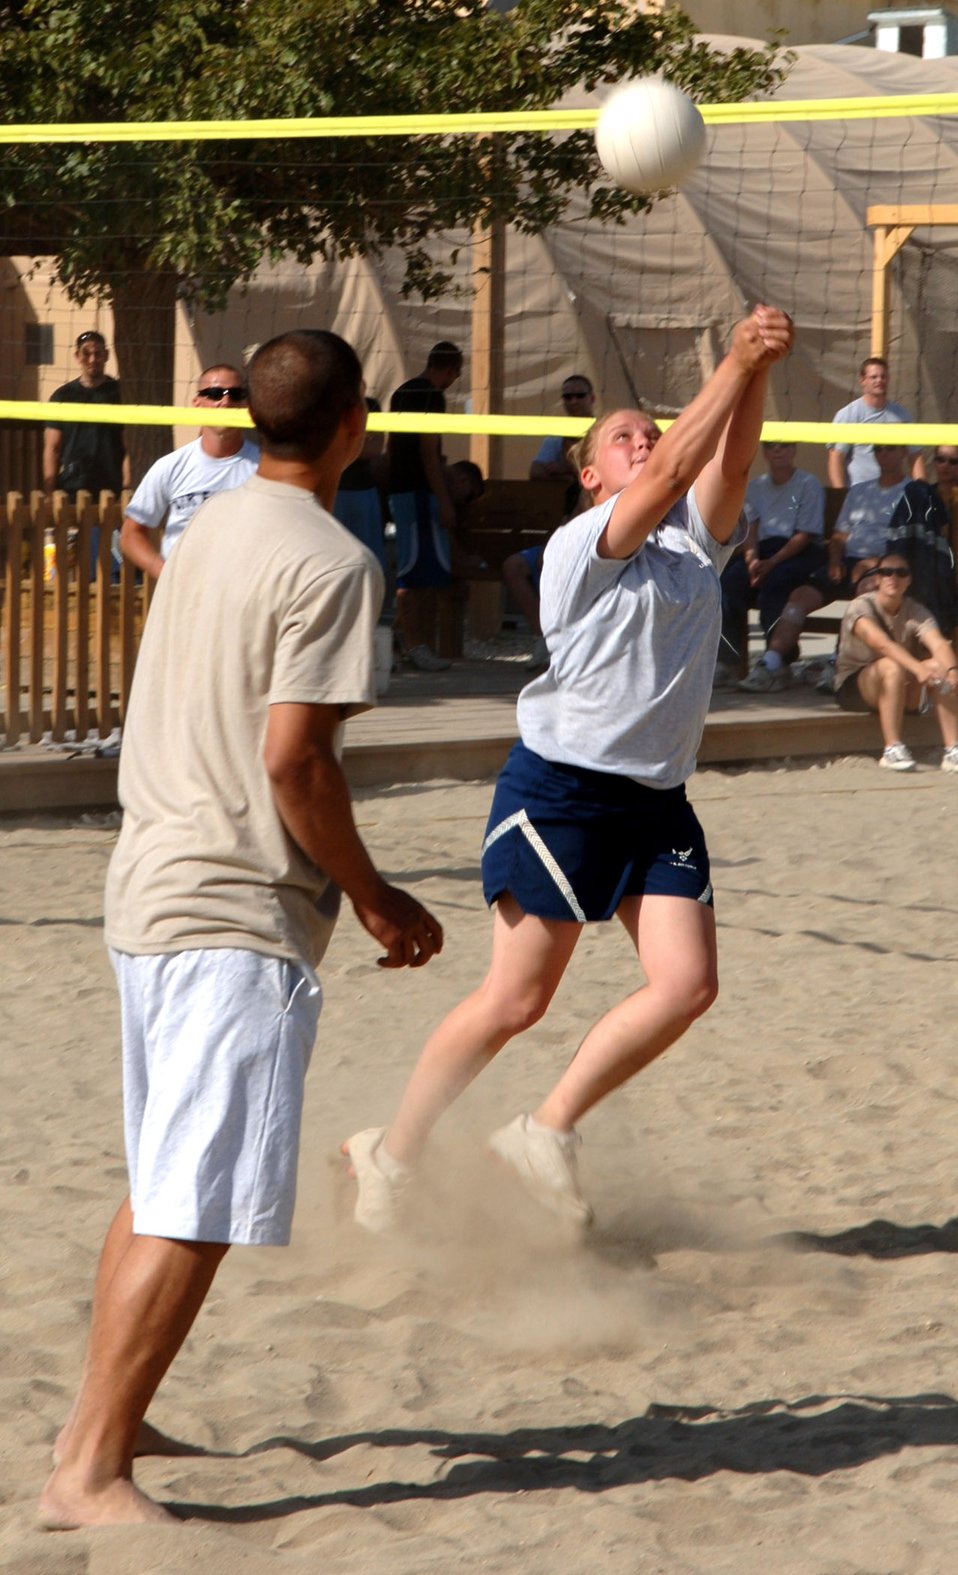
Morale building

BAGRAM AIR BASE, Afghanistan (AFPN) -- Sarah Beauchamp sets the ball during a volleyball tournament. The tournament is one of many events put together by professional organizations here. Airman Beauchamp is deployed from Dover Air Force Base, Del., and is assigned to the 455th Expeditionary Security Forces Squadron.